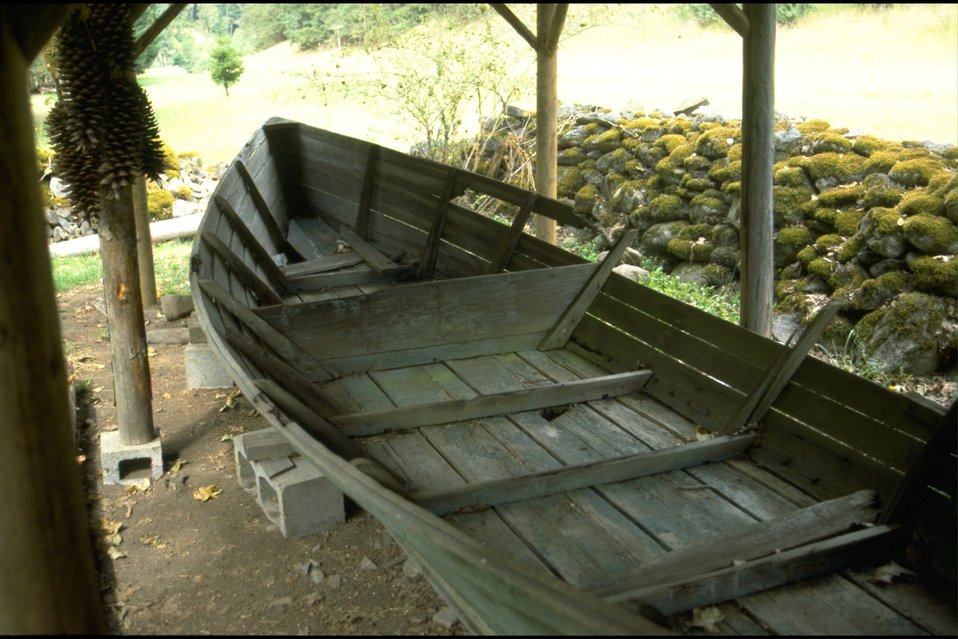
Rogue River - Winkle Bar. Zane Grey's Boat, wild section.